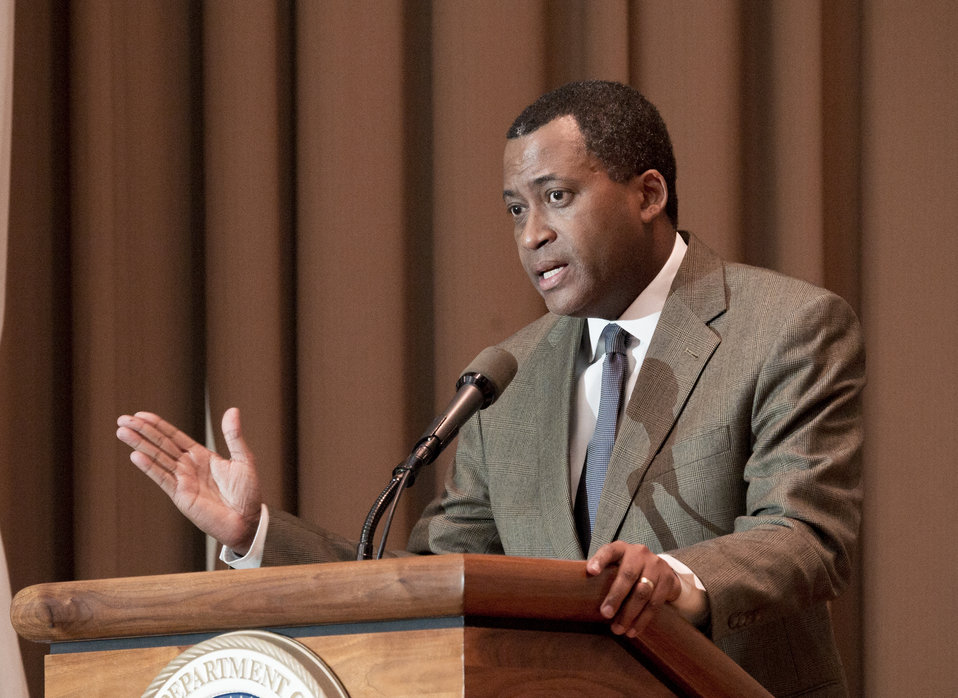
U.S. Department of Agriculture (USDA) Assistant Secretary for Civil Rights (OCR) Dr. Joe Leonard, Jr. speaks at the 2013 American Indian and Alaska Native Heritage Observance at the USDA on Thursday, Nov. 14, 2013 in Washington, D.C. The theme of this year’s event “Guiding Our Destiny with Heritage and Traditions.”